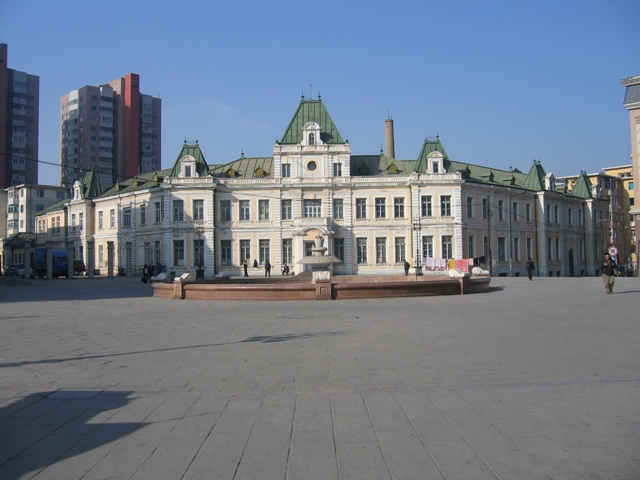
taken by author, Nov. 2004